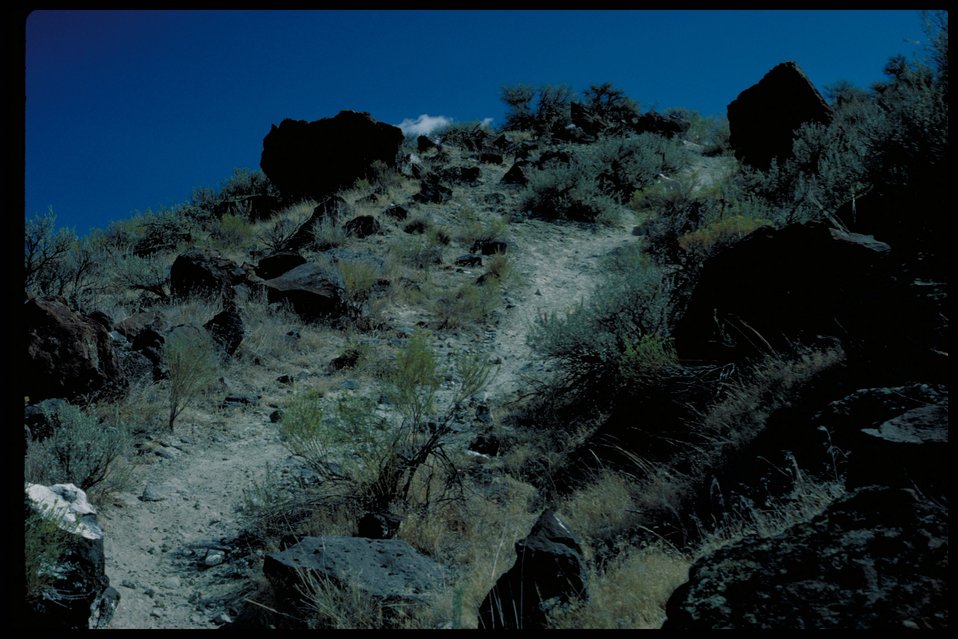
The Narrows Oregon Trail Lower Snake River District